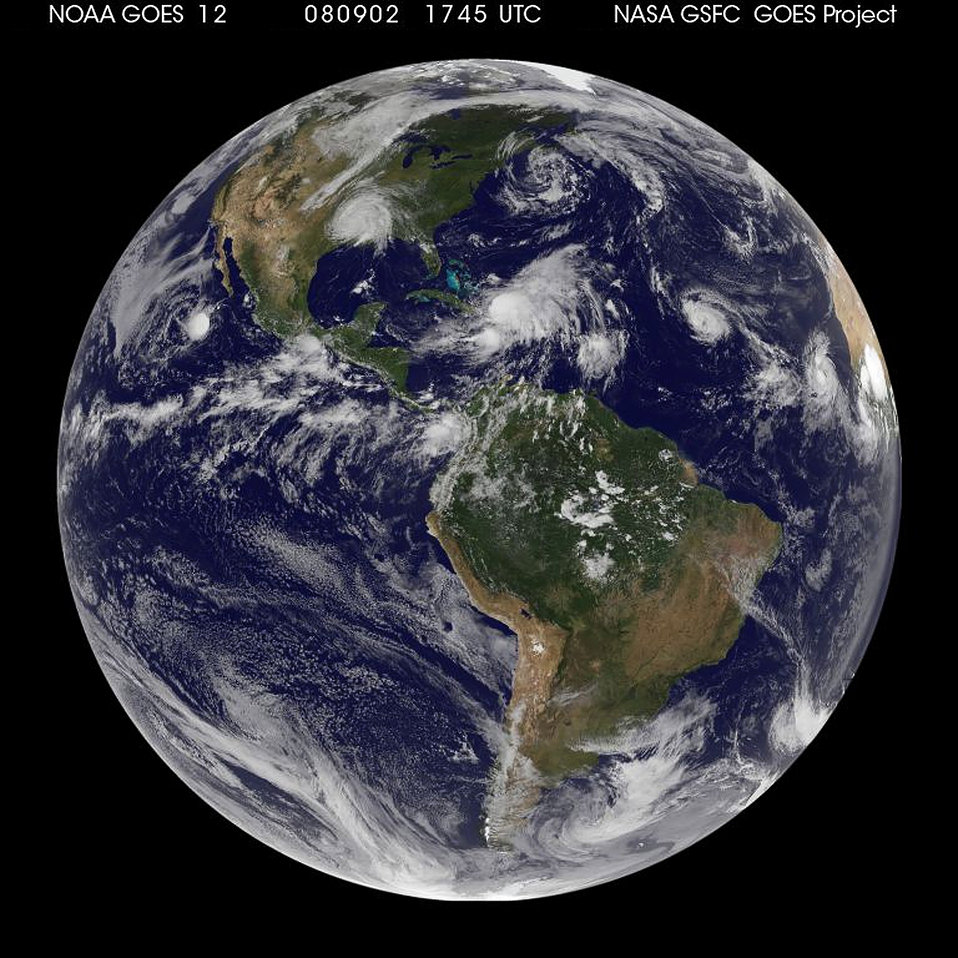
September 02, 2008Tropical Storm Josephine Forms in Far Eastern Atlantic